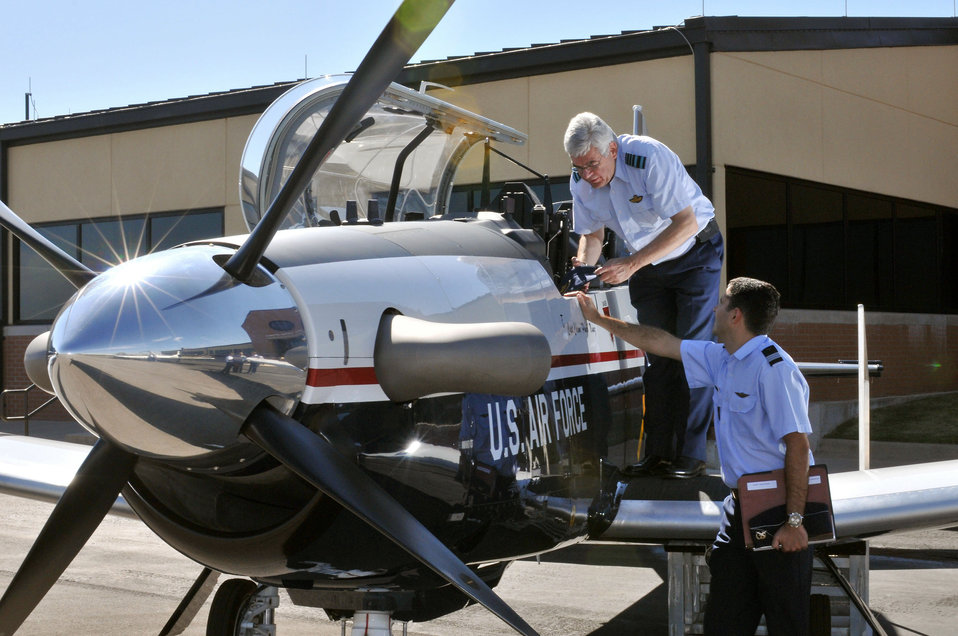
NATO air chiefs discuss common challenges, solutions

Belgium Lt. Gen. Gerard Van Caelenberge views the T-6A Texan II Oct. 9 at Sheppard Air Force Base, Texas. NATO air chiefs from 19 countries toured Air Force facilities at five locations during their visit. General Van Caelenberge is Belgium's air component commander.